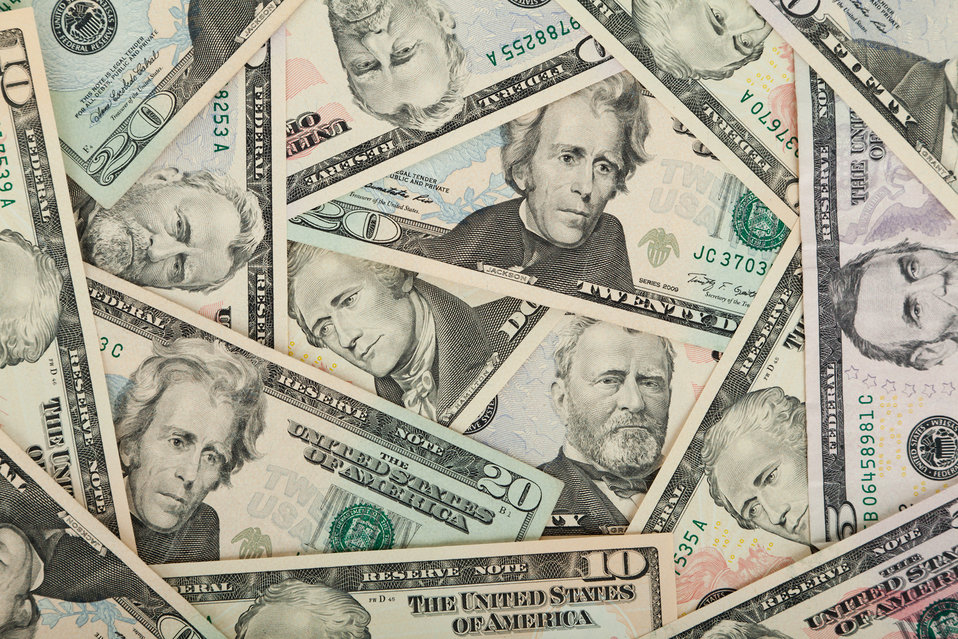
Dollar wallpaper

Money background from us dollars.